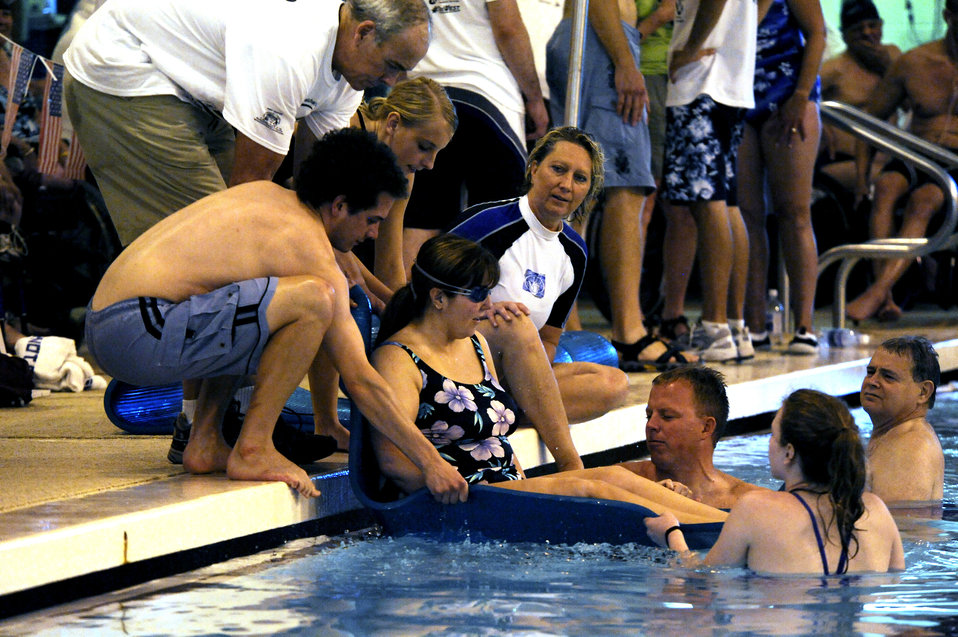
Former Airman competes in veterans Wheelchair Games

Terri Fuda is assisted by volunteers into the water before she competes in the swimming competition held at the Whitworth University swimming pool during the 29th National Veterans Wheelchair Games July 15 in Spokane, Wash. Ms. Fuda is an Air Force veteran from Gillespie, Ill.